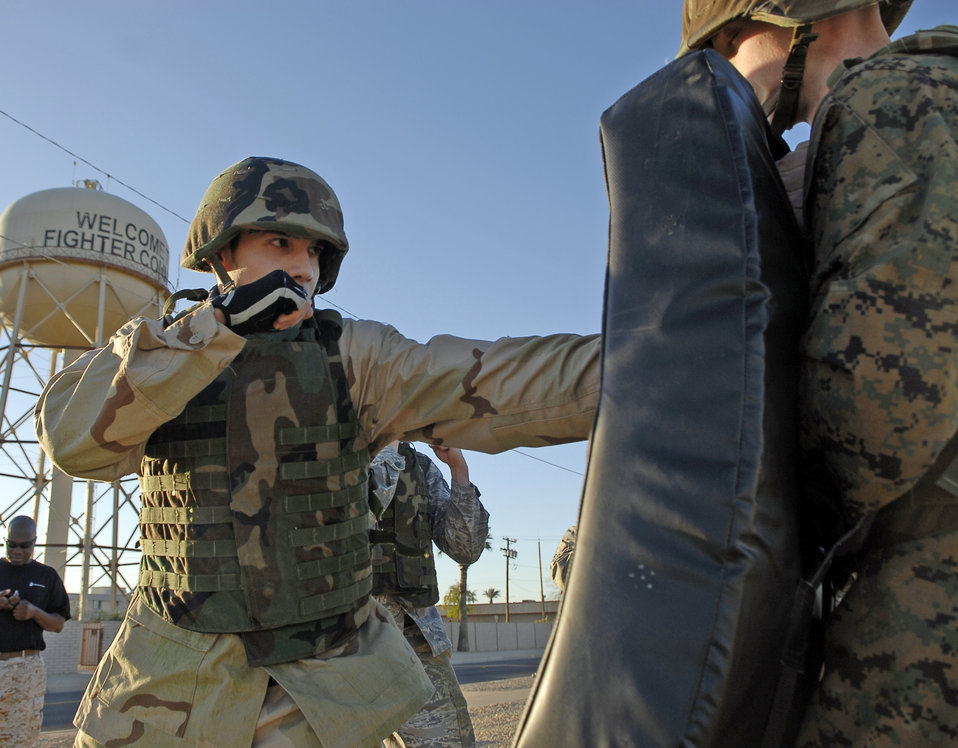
Luke Airmen train for combat

Matthew Corcoran (left) punches a combat pad held by Marine Corps. Lance Cpl. Jay Clayton during a military combative training course April 7, 2010, at Luke Air Force Base, Ariz. Mr. Corcoran is a 56th Force Support Squadron CrossFit group instructor. Corporal Clayton is assigned to the Bulk Fuel Co. C, 6th Engineer Support Battalion.